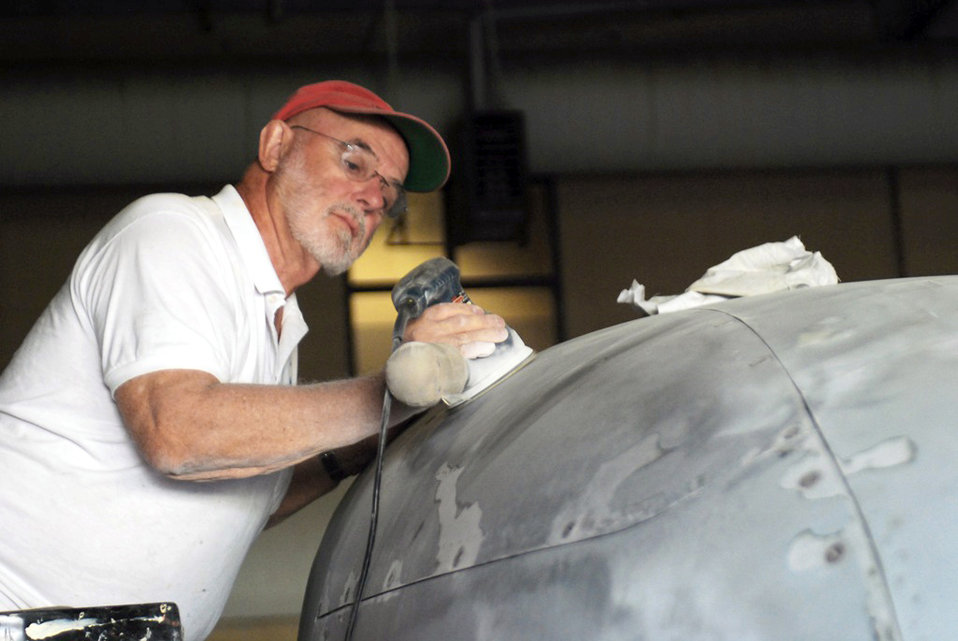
122nd BSRU

Chapman Holbrook prepares the nose of a B-26 Marauder to be used as a monitor to display photos in the Jackson Barracks Museum Oct. 27, 2010, in New Orleans. The 122nd Bomb Squadron Restoration Unit is a group of volunteer retired Guardsmen who meet every Wednesday to help restore old military aircraft and cannons for the Jackson Barracks Museum. Mr. Holbrook is a member of the 122nd Bomb Squadron Restoration Unit.